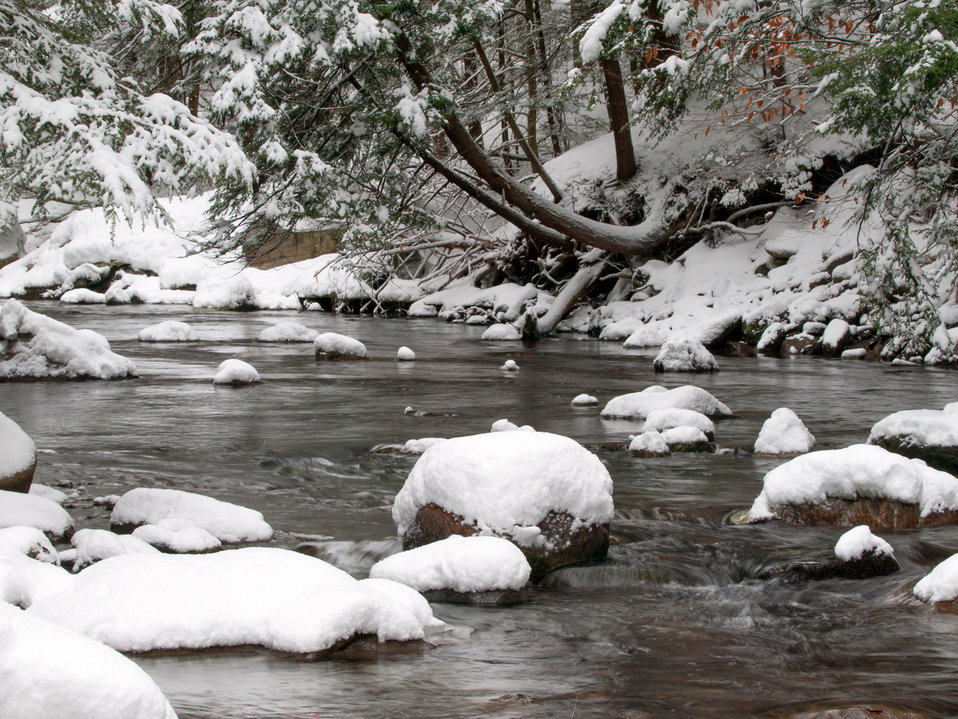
Photo of the Week - South River (MA)

Photo of the Week - 2/4/13

Fresh fallen snow on rocks in South River in Conway, MA.